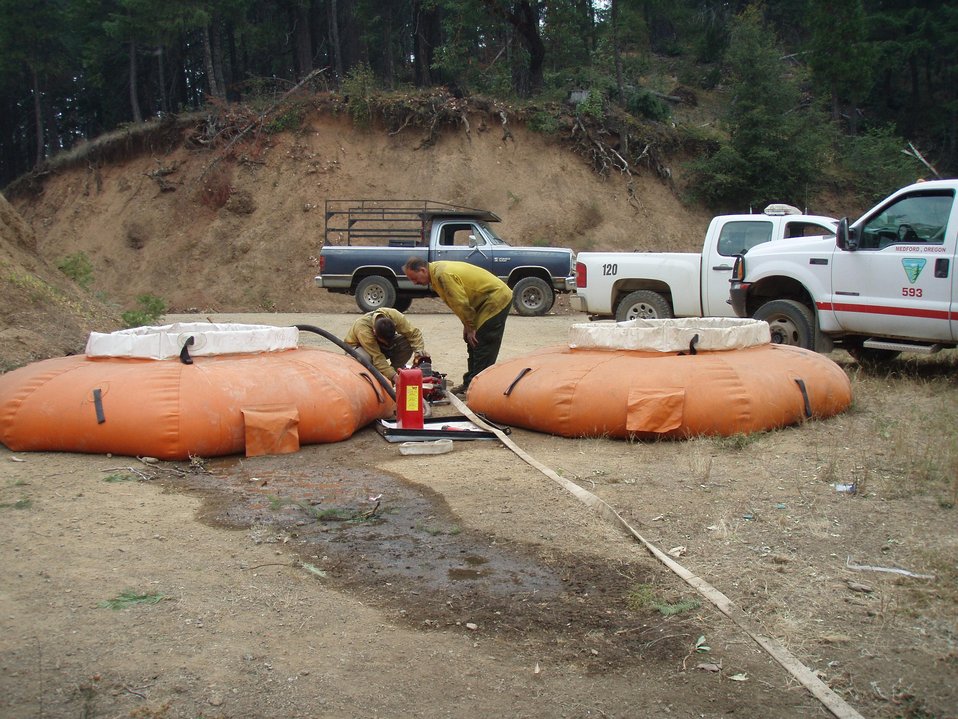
Firefighters set up “Pumpkin” water tanks used to fight the Brimstone Fire in Oregon. These rugged, lightweight, multi-purpose tanks are used for ground fire-fighting, aerial operations or as a reservoir/relay tank. The Brimstone Fire near Merton, OR began on Jul. 26, 2013 began by lightning consumed 2,372 acres and is 100% contained.